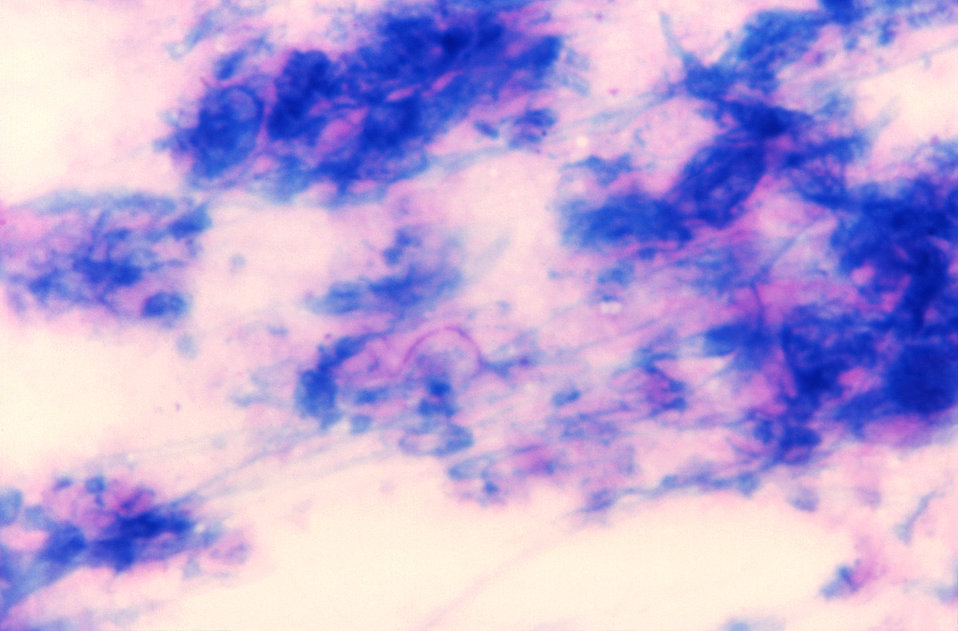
A photomicrograph of a touch preparation of pus revealing Nocardia sp., using Acid-fast staining technique.